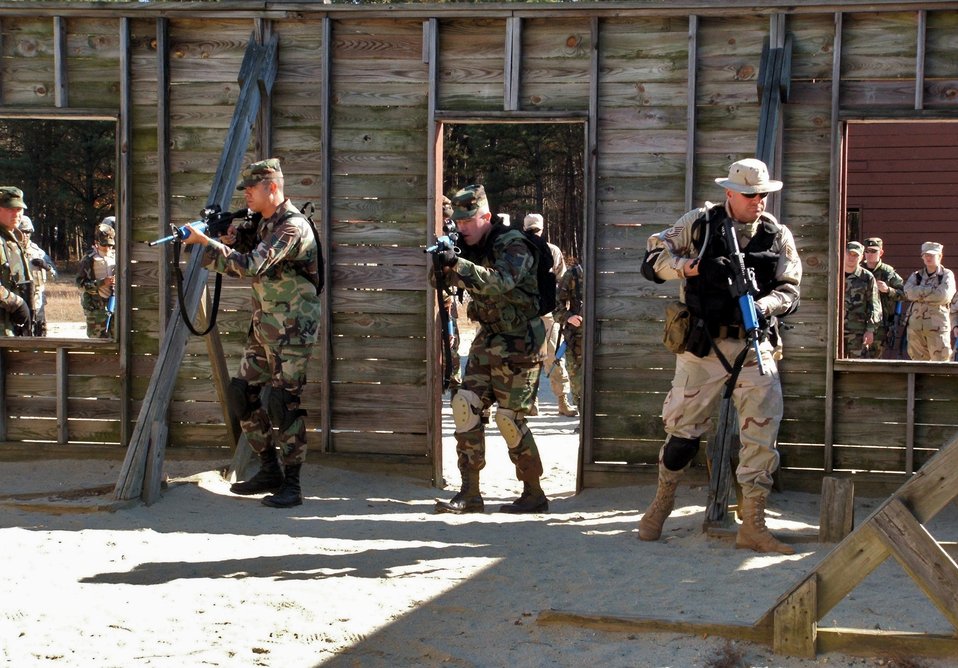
COMBAT INTERROGATOR COURSE 06-1

FORT DIX, N.J. (AFPN) -- Airmen participating in the Combat Interrogator Course 06-1 practice a close quarter combat maneuver at a tactical area. The class was taught by the 421st Combat Training Squadron at the Air Mobility Warfare Center, Fort Dix, Nov. 14.